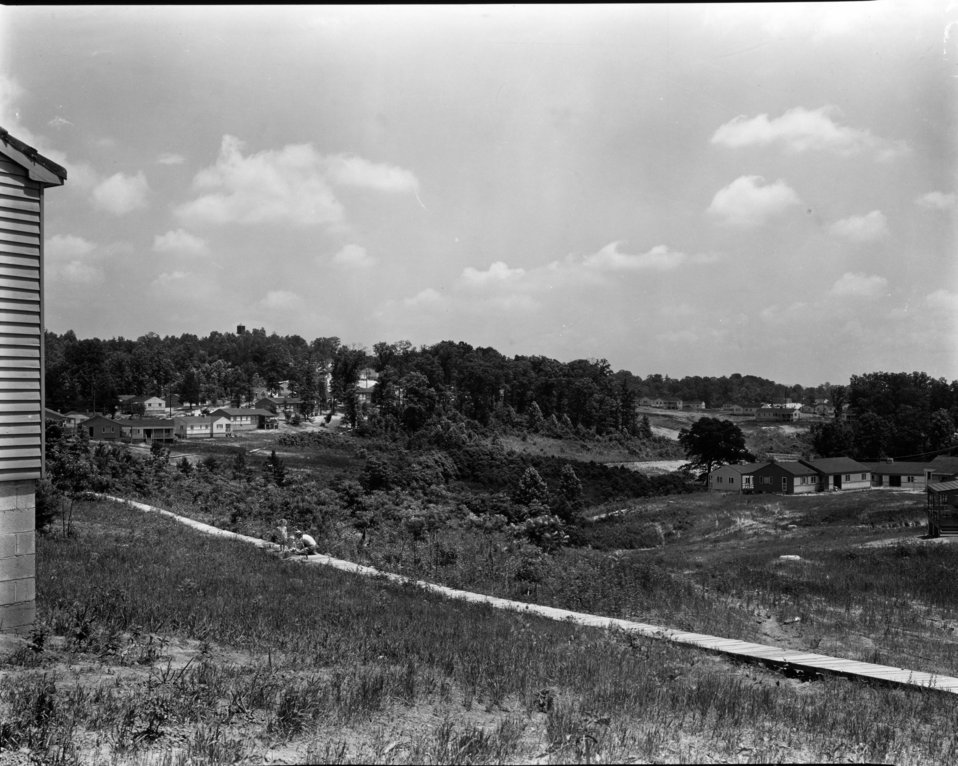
Daily Life at Oak Ridge